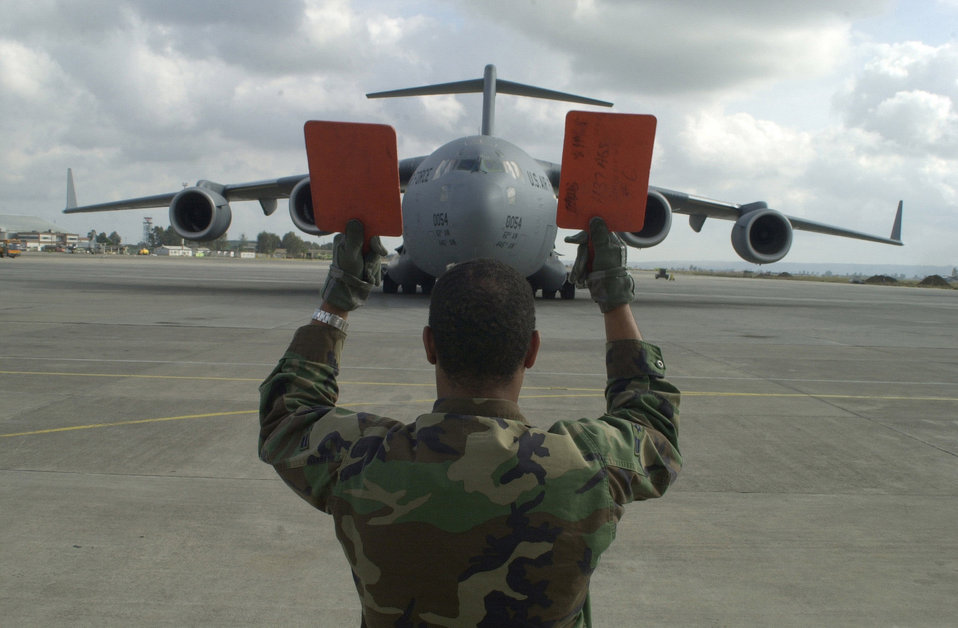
Hold it there

OPERATION ENDURING FREEDOM -- Airman 1st Class Scott McCormrick from the 437th Aircraft Generation Squadron at Charleston Air Force Base, S.C., marshals in a C-17A Globemaster III at an operating location in support of the U.S. Central Command execution of Operation Enduring Freedom on Nov. 16.